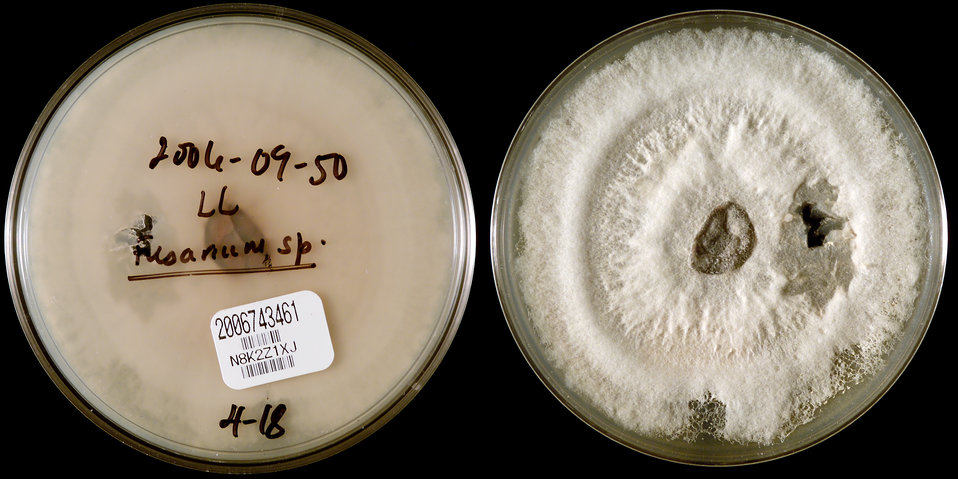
This image depicted two sides of a Petri dish, which had been inoculated with a specimen derived from the left contact lens of a Tennessee Fusarium keratitis-patient, and had subsequently grown a filamentous colony of Fusarium solani Species Complex (FSSC Group# 1) fungal organisms. The type of agar medium in the case of this specimen was unknown. While it is not unusual for Fusarium to cause keratitis, it was the number of affected individuals, which had increased dramatically, predominantly in persons wearing contact lenses, that had warranted this epidemiologic study. The laboratory received cultures which came from two sources: Fusarium spp. isolated from the eyes of patients with fungal keratitis, and cultures from contact lenses, cases and/or lens solution.